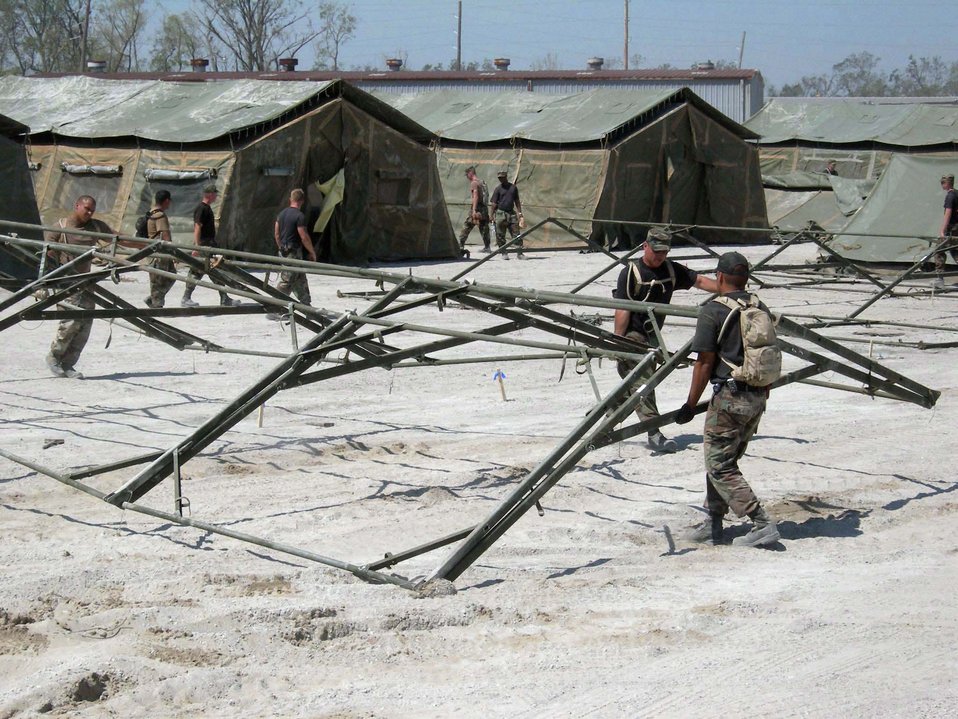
Joint operations

LOUIS ARMSTRONG NEW ORLEANS INTERNATIONAL AIRPORT, La. -- Airmen with the 4th Expeditionary Civil Engineer Squadron and Soldiers with the 82nd Airborne Division move a frame into place for a tent. The two groups worked to build a tent city here for Soldiers supporting humanitarian efforts in New Orleans.